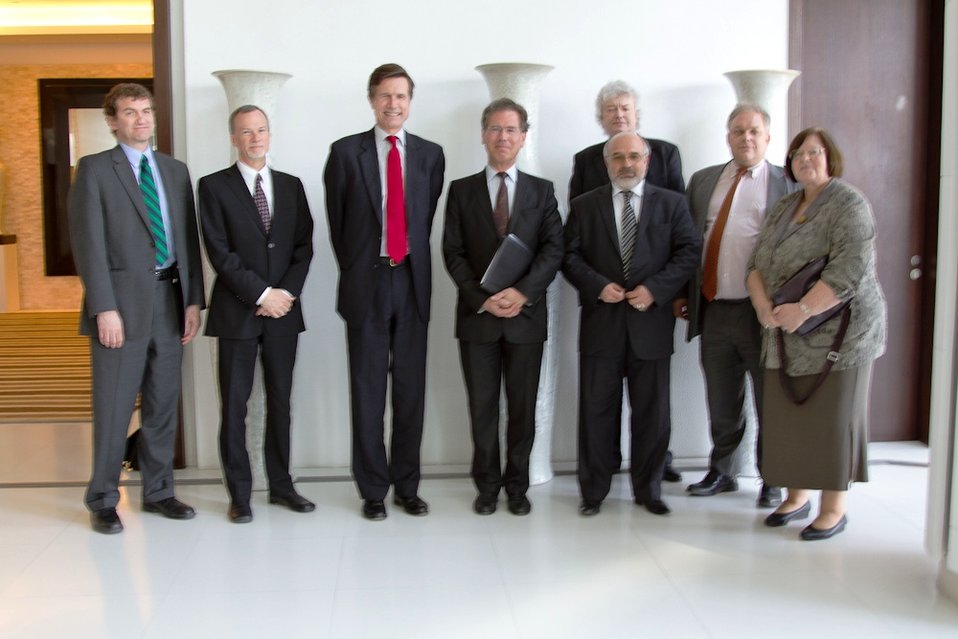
3Assistant Secretary Blake Leads U.S. Government-Interagency Delegation to U.S.-Tajikistan Annual BIlateral Consultations

U.S. Assistant Secretary of State for South and Central Asian Affairs, Robert O. Blake, Jr. leads the U.S. government-interagency delegation to the second U.S. - Tajikistan Annual Bilateral Consultations in Dushanbe, Tajikistan, April 11 - 12, 2011. [Damian Wampler/ State Department photo/ Public Domain]